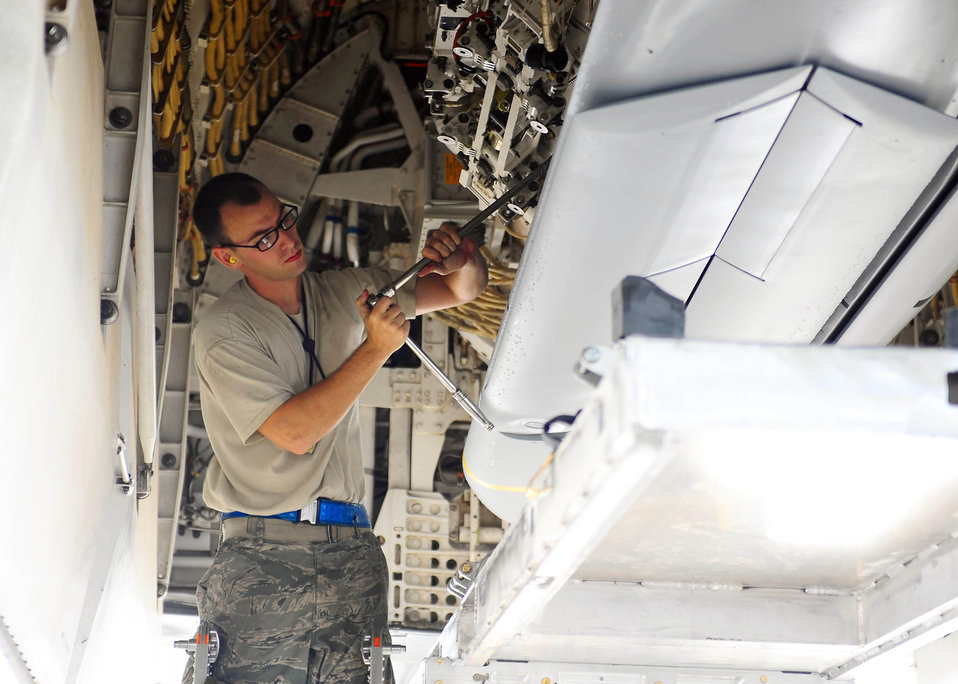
B-1 carries record-setting missile load

Staff Sgt. Cedric DeBourbon makes final adjustments prior to loading AGM-158 Joint Air-to-Surface Stand-off Missles onto a B-1B Lancer Sept. 7, 2010, at Dyess Air Force Base, Texas. 7. JASSMs are designed to keep the jet and its crew a significant distance away from surface-to-air threats while still holding an enemy's targets at risk. Sergeant DeBourbon is assigned to the 7th Airlift Maintenance Squadron.